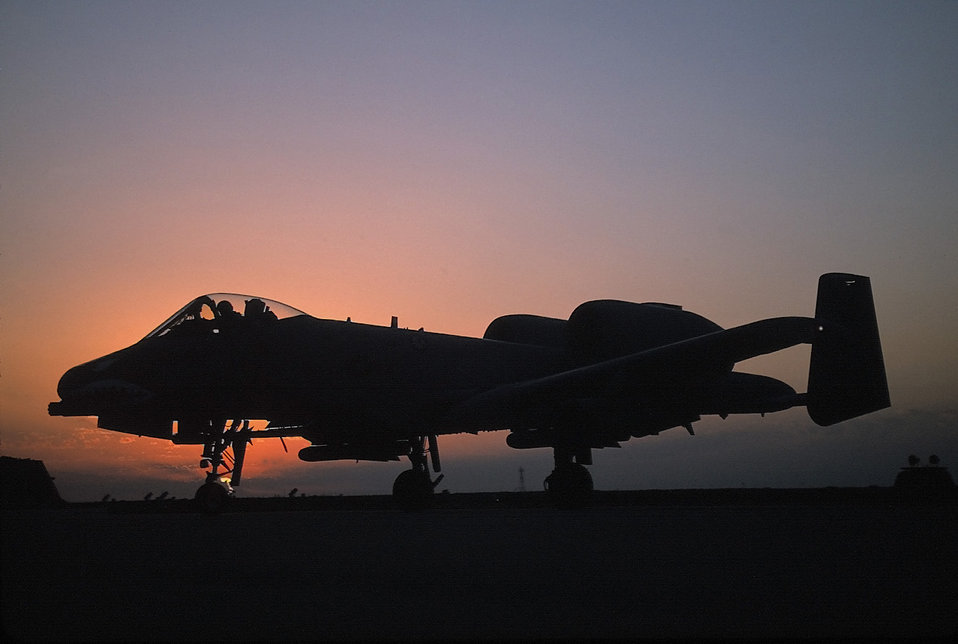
A-10 Thunderbolt II at rest

1990's -- The A-10 Thunderbolt II is the first Air Force aircraft specially designed for close air support of ground forces. They are simple, effective and survivable twin-engine jet aircraft that can be used against all ground targets, including tanks and other armored vehicles.